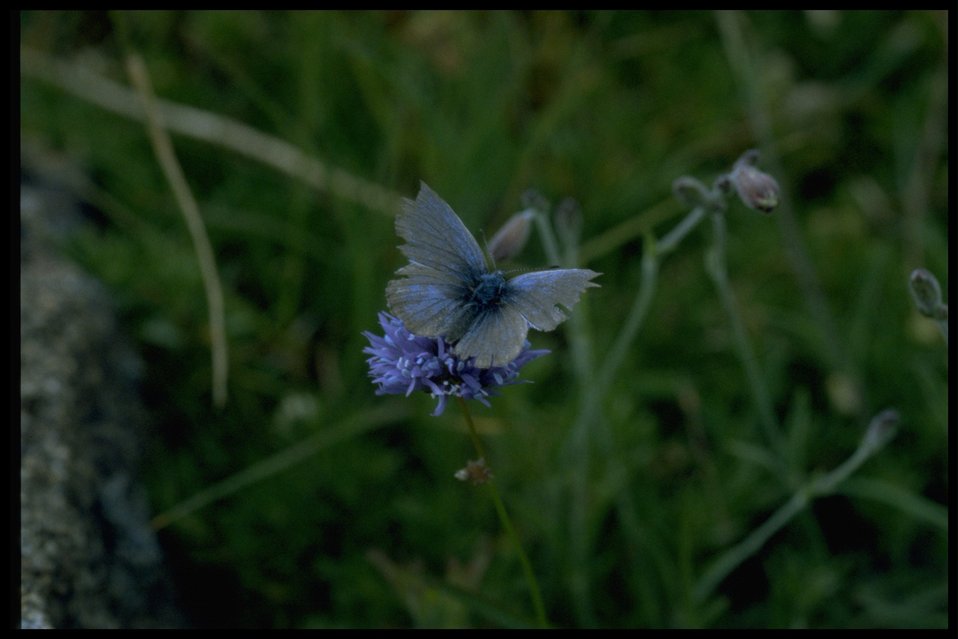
Medium shot of butterfly and Gilia (Ipomopsis) Capitata